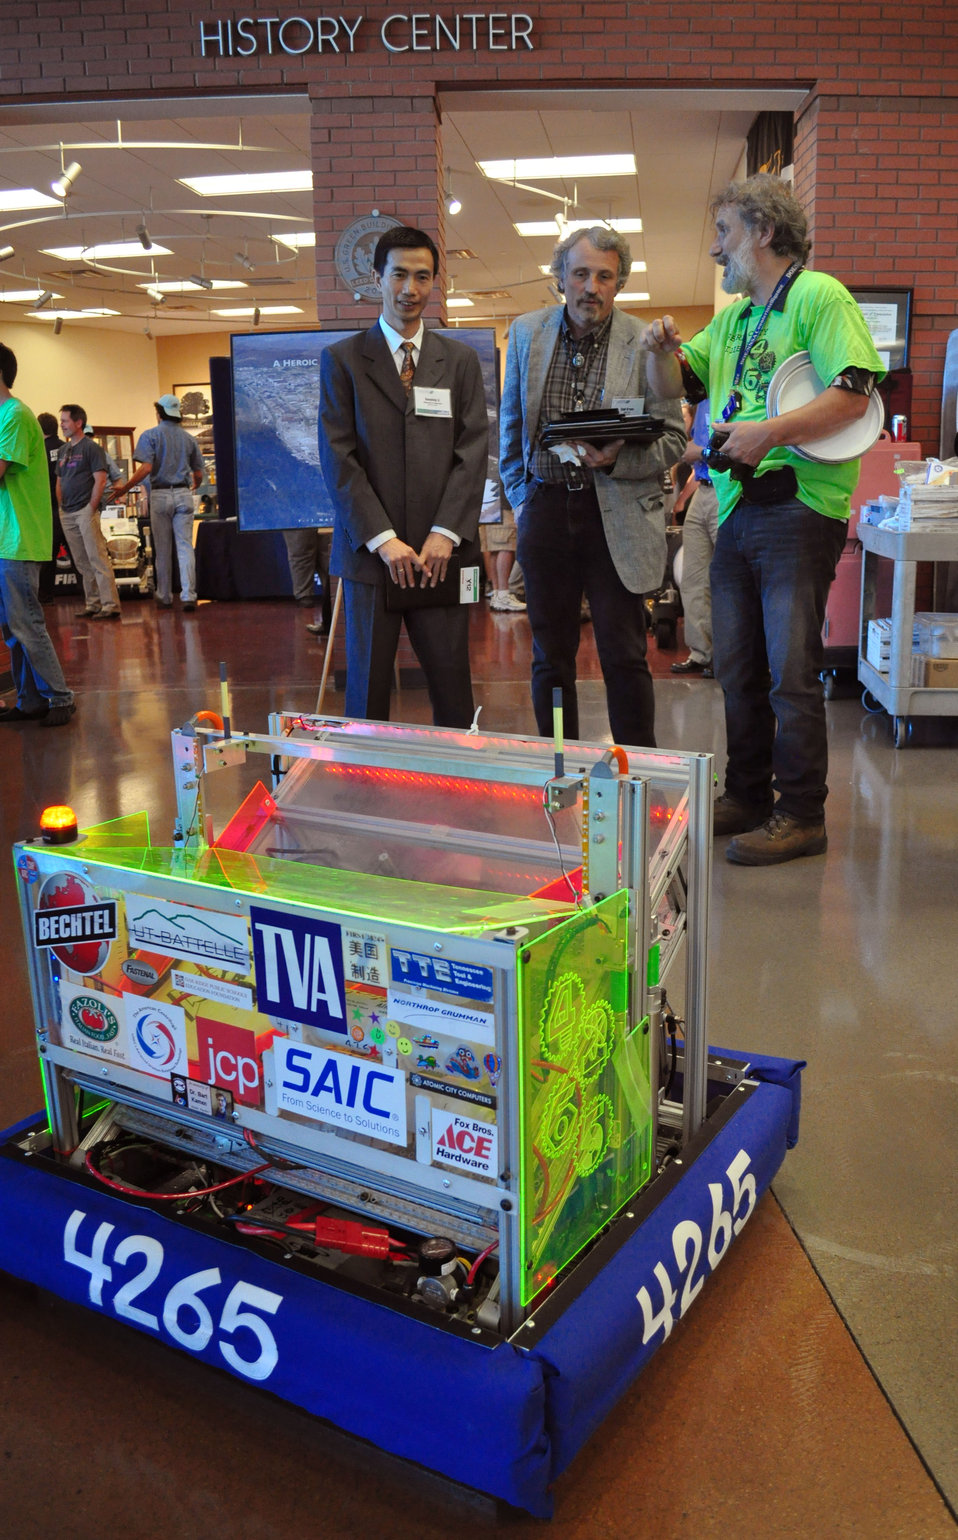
Tennessee Valley Corridor 2013 Oak Ridge

13-062 DOE photo Lynn Freeny 5-29-2013 Oak Ridge Tennessee